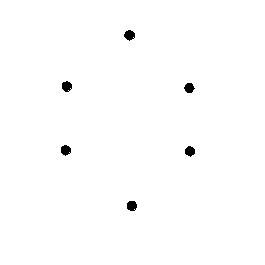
Čeština: 0-regulární graf na 6 vrcholech a null graph